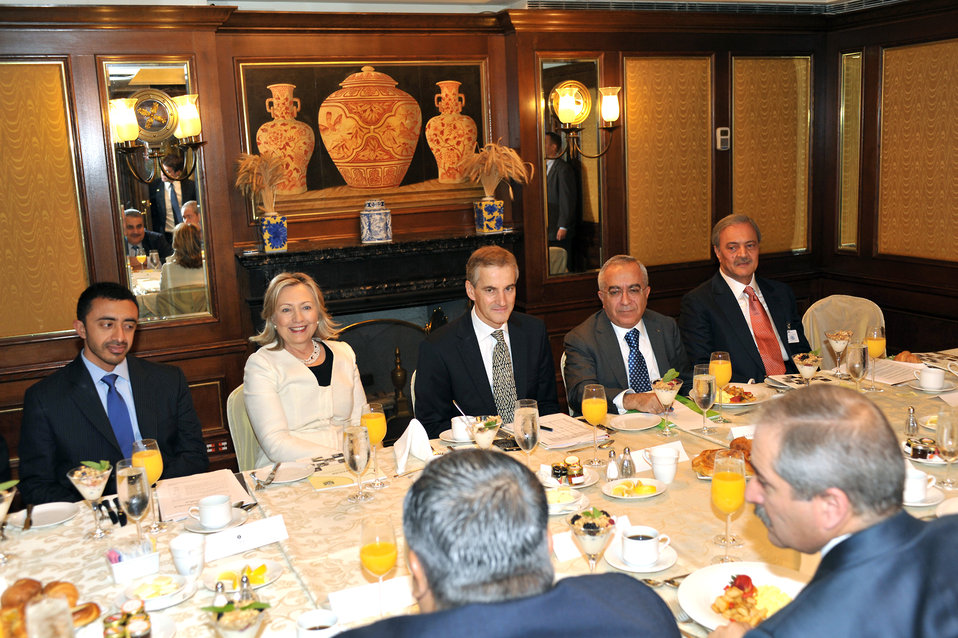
Secretary Clinton Participates in an Ad Hoc Liaison Committee Breakfast

U.S. Secretary of State Hillary Rodham Clinton participates in an Ad Hoc Liaison Committee breakfast meeting at the InterContinental hotel in New York, New York, on September 20, 2010.